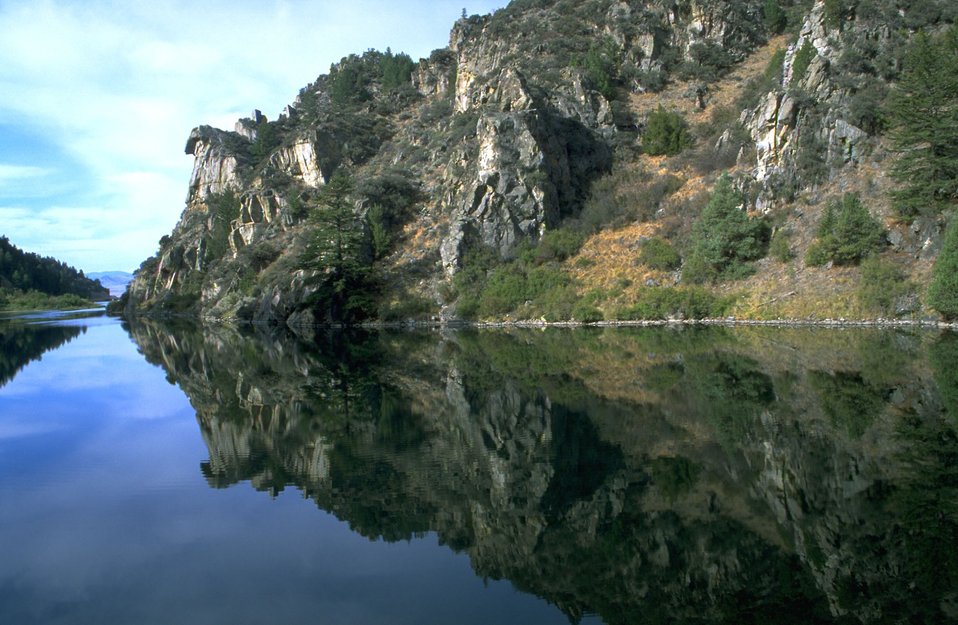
Reflections from west bank of Trail Creek